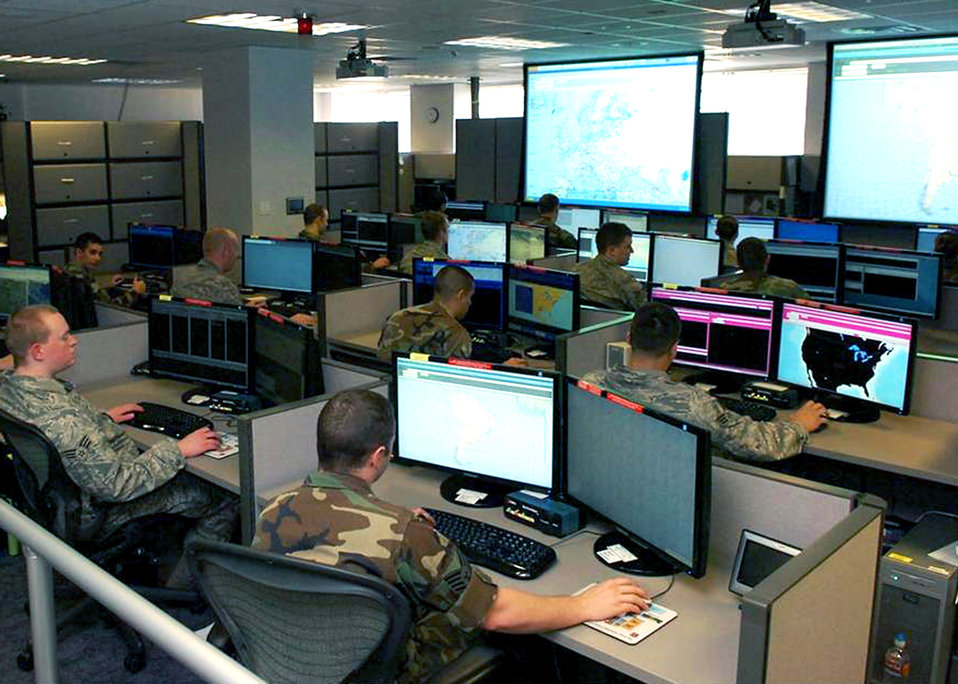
Squadron provides 'electronic armor'

Flagging flight analysts examine data feeds to determine if there are any anomalies in the collected data. They then determine whether there is a new threat in that region. The flight is part of the 453rd Electronic Warfare Squadron located at Lackland Air Force Base, Texas, which is part of the 53rd Wing headquartered at Eglin AFB, Fla.